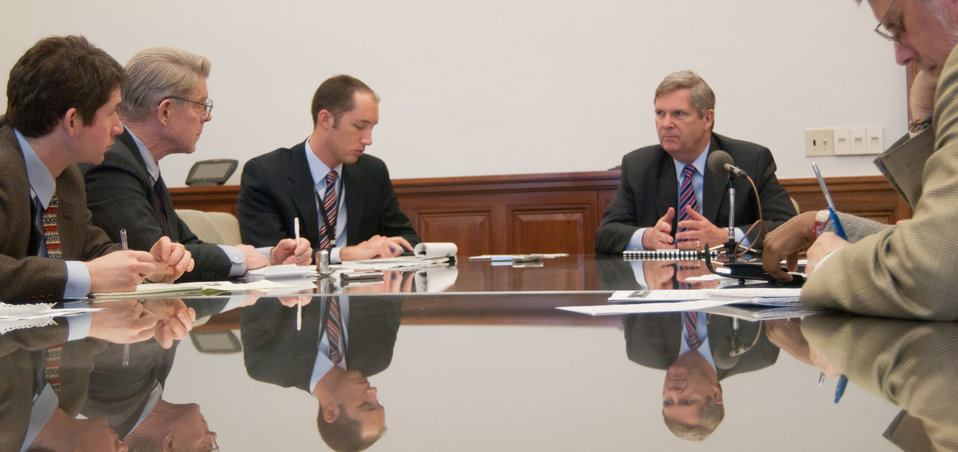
Agriculture Secretary Tom Vilsack (second from right) responds to a question from Agri-Pulse journalist Jonathan H. Harsch (second from left), during a question and answer session after the briefing to news media on how the U.S. Department of Agriculture actions will support President Barrack Obama’s proposed budget, Monday, February 14, 2011, in Washington, D.C. In an effort to promote good government and streamline agency operations in a host of programs, programs have been selected to be reduced or terminated. Secretary Vilsack said, “In the end we must cut to grow. And we are working to do it as responsibly as possible for American Agriculture and the American people.”